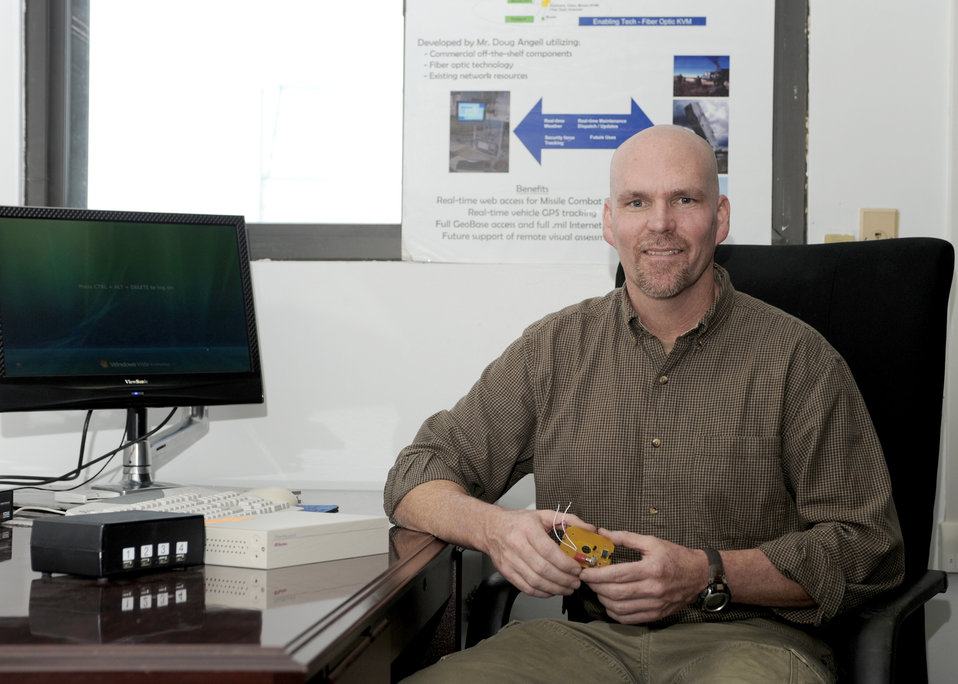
IDEA winner

Douglas Angell poses with his invention, the Launch Control Center NetLink, Nov. 23, 2010, at Minot Air Force Base, N.D. The LCC NetLink concept allows personal computing capability to crewmembers while they are on duty at the missile alert facilities. Mr. Angell is a 526th Intercontinental Ballistic Missile Systems Group technical engineer.